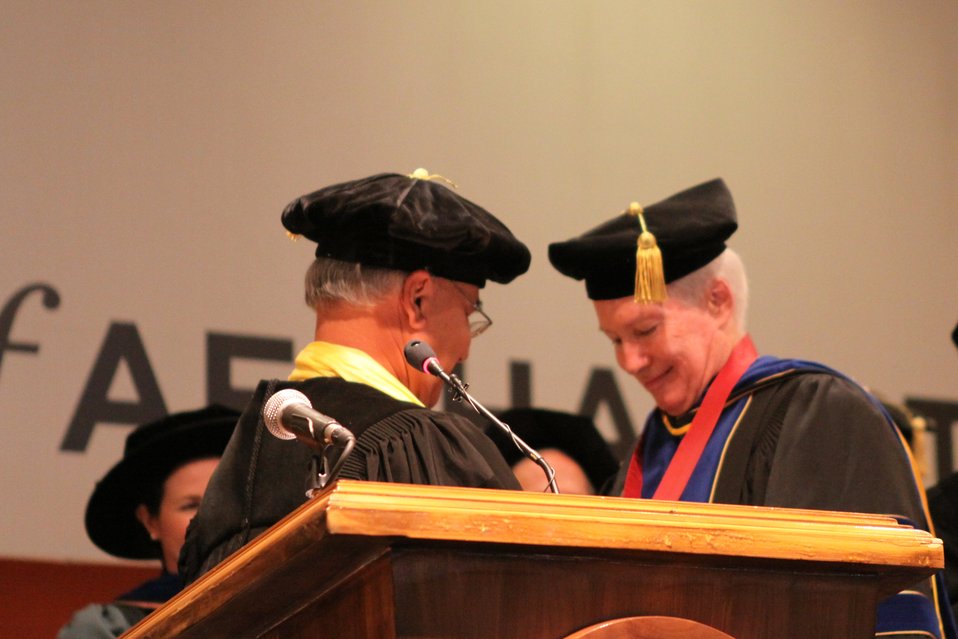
100526 AUAF Graduation 177